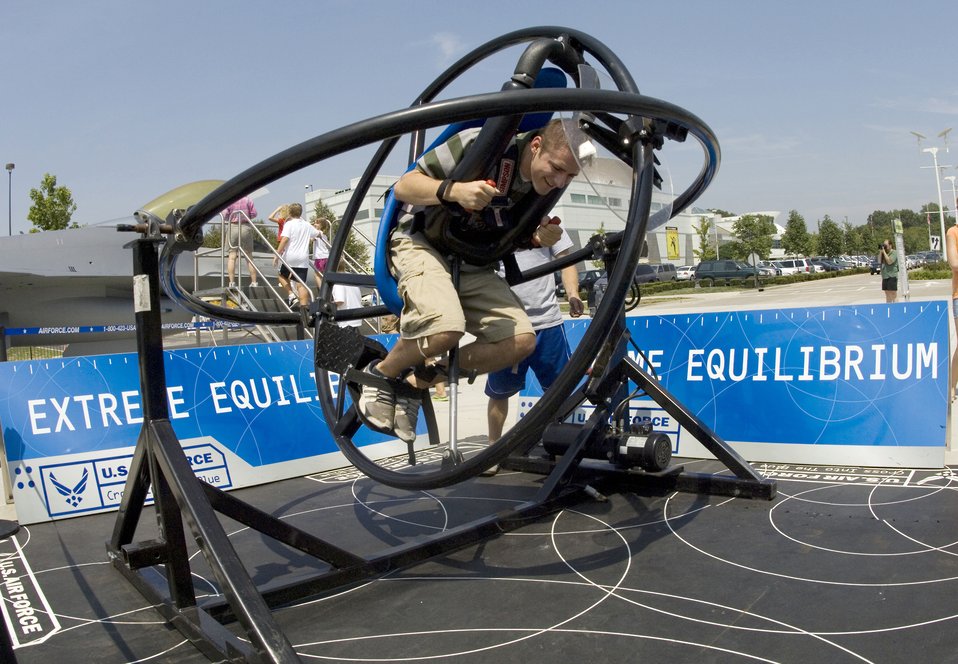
Focus on flight

Chris Buzzetta, a senior at the University of Missouri at St. Louis, takes a spin on the Extreme Equilibrium machine Aug. 9 at the St Louis Science Center. The machine allows riders to experience some of the sensations that Air Force pilots feel when flying. Events at the center were some of several activities taking place in the greater St. Louis area celebrating Air Force Week.